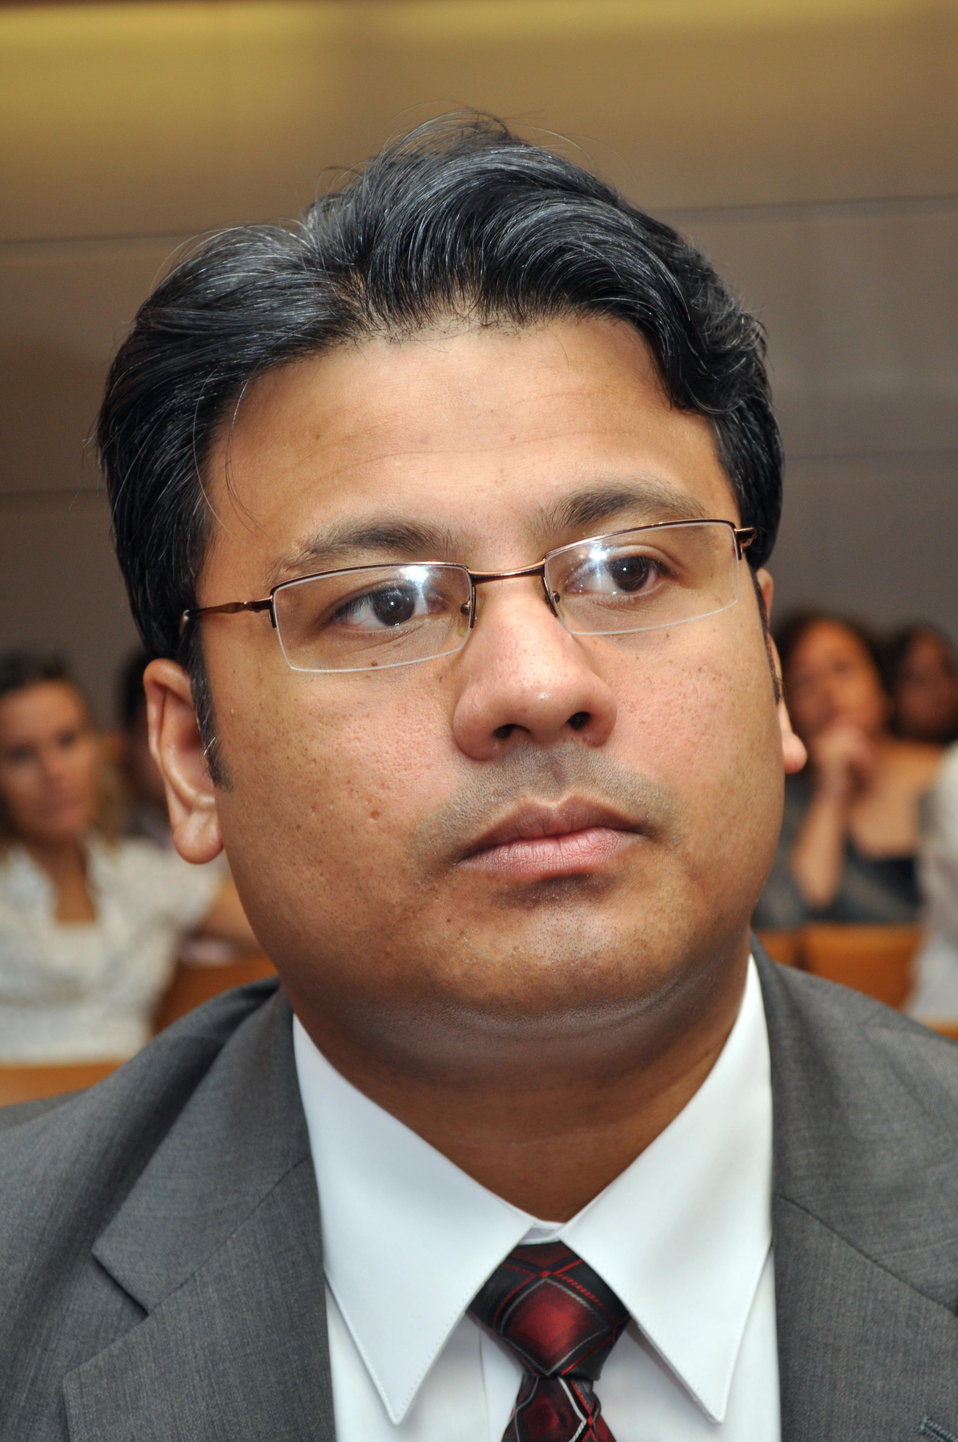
Engineers and Economists

At the August, 2011 Open Meeting the FCC recognized engineers and economists.